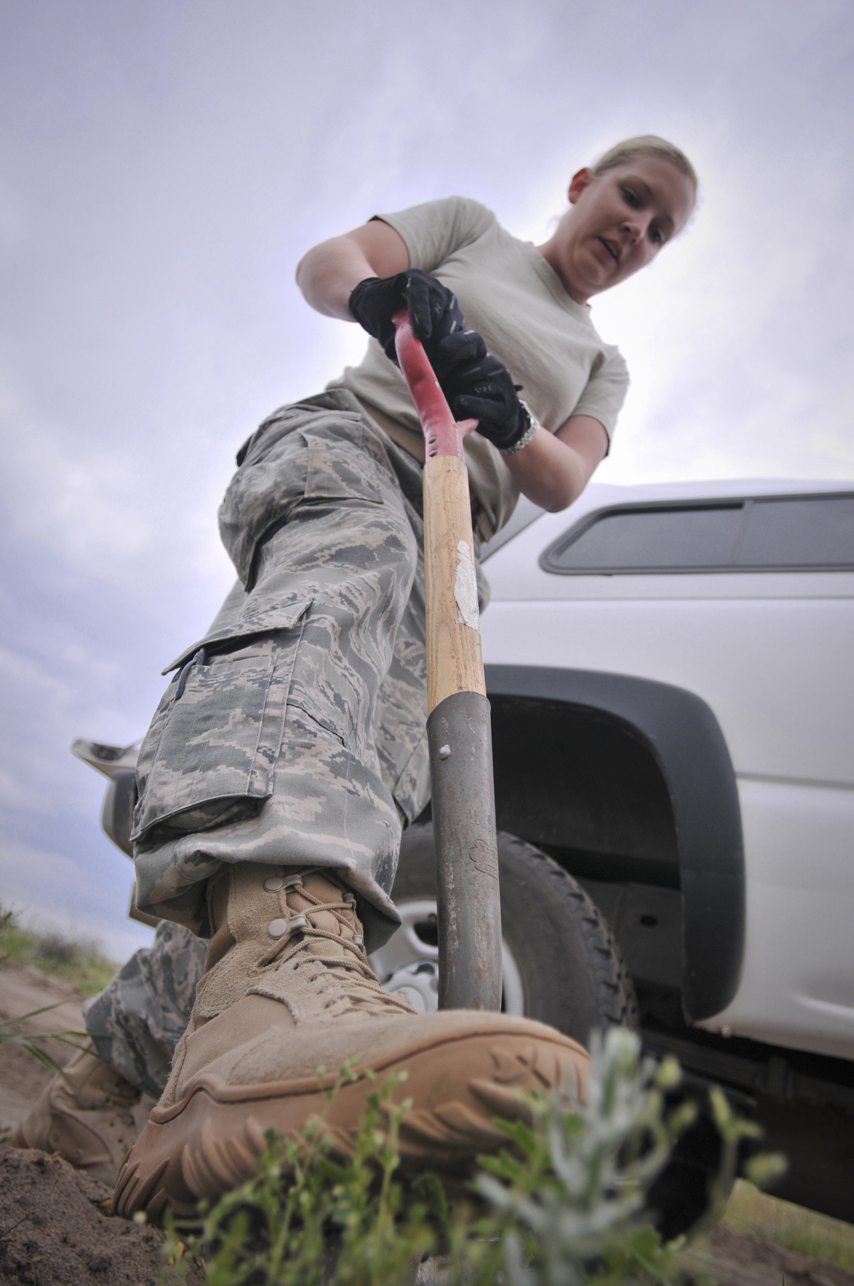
Getting the job done

Staff Sgt. Heather Flanagan performs maintenance May 2, 2011, at the Transit Center at Manas, Kyrgyzstan. Sergeant Flanagan is the NCO in charge of physical security for the 376th Expeditionary Security Forces Squadron.